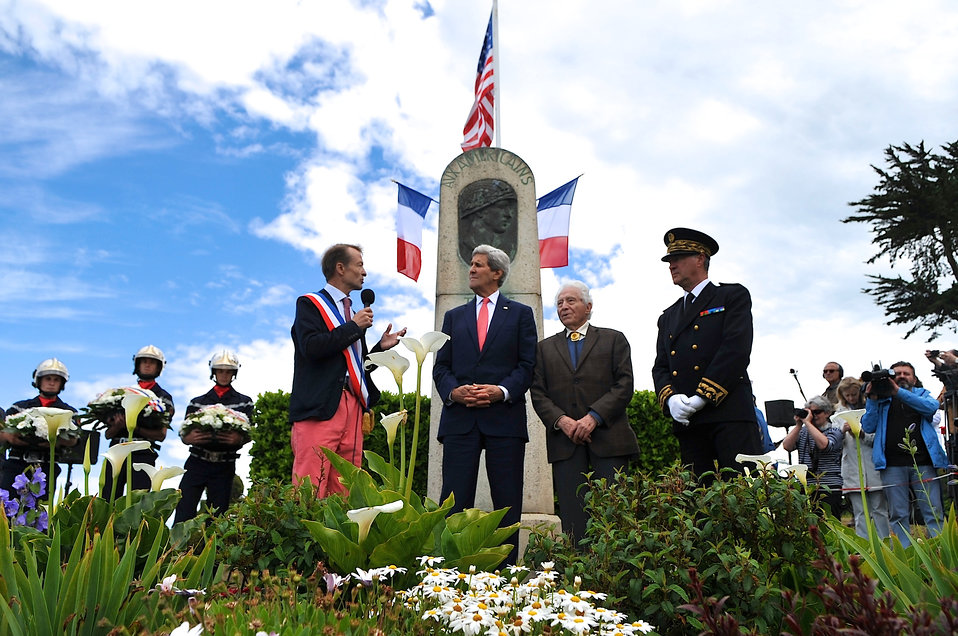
Mayor of Brittany Town Thanks Secretary Kerry, American Soldiers For Liberating Town at End of WWII

Mayor Vincent Denby-Wilkes addresses U.S. Secretary of State John Kerry, World War II photographer Tony Vaccaro, and Prefect Patrick Strzoda during a ceremony in Saint Briac, France, on June 7, 2014, to honor three Americans who died liberating the community at the end of World War II.